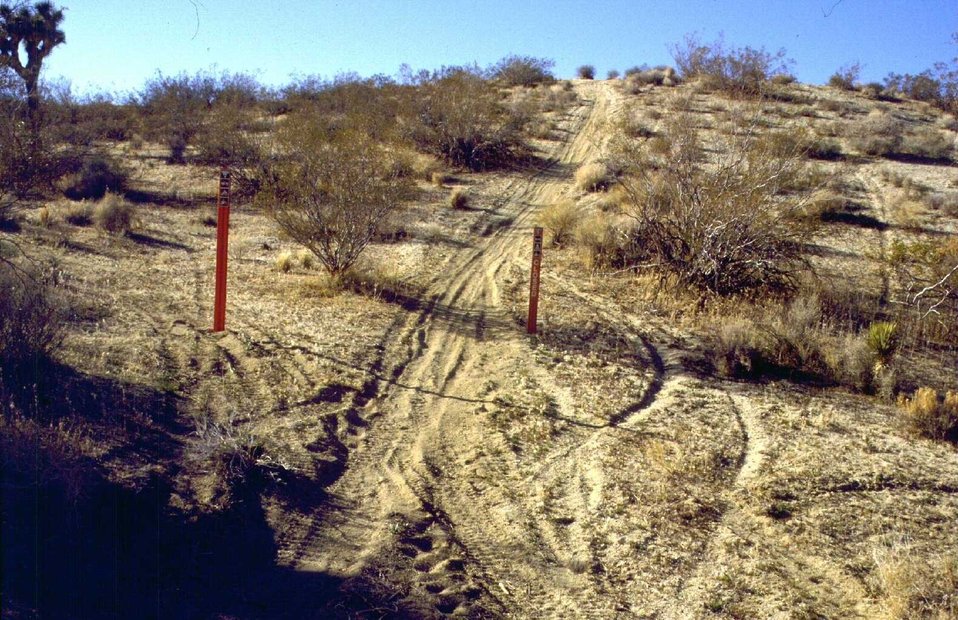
Active trespass route being established around red route closed sign.